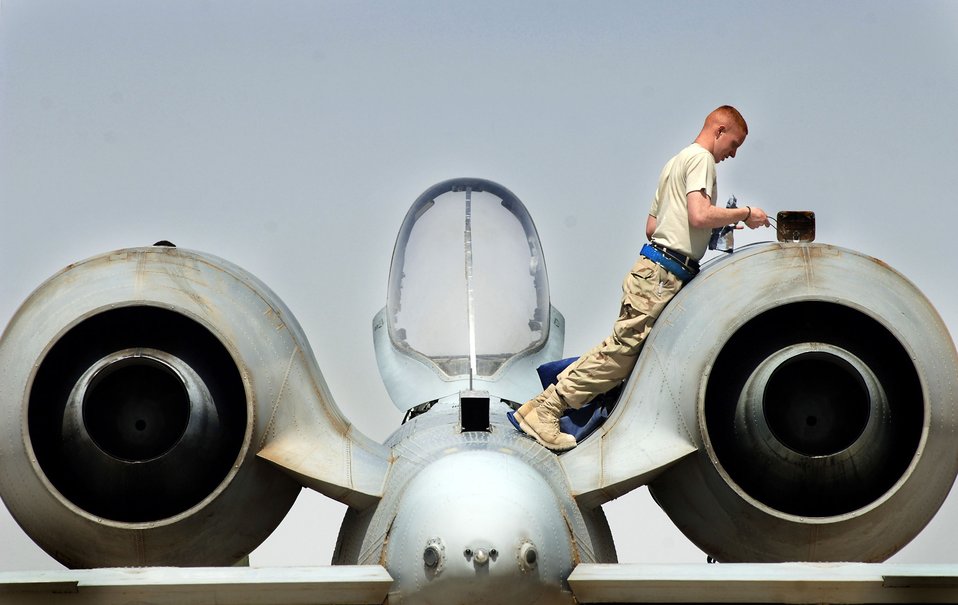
A-10 provides top cover for troops in Iraq

Senior Airman Kevin Crawford performs an intake and exhaust inspection on an A-10 Thunderbolt II April 25 at Al Asad Air Base, Iraq. A-10s provide close-air support to ground troops in Iraq. The 438th Air Expeditionary Group A-10s perform approximately 10 sorties daily. Airman Crawford is assigned to the 438th AEG. His hometown is Boling Brook, Ill.